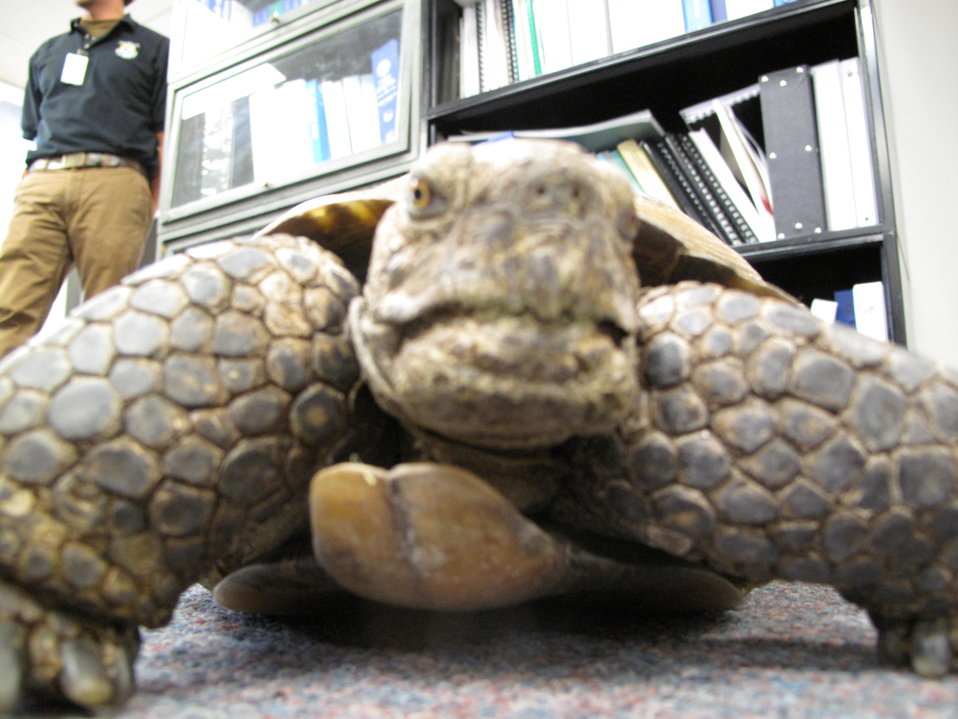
Face

Crush the desert tortoise visits the Regional Office in Region 6.